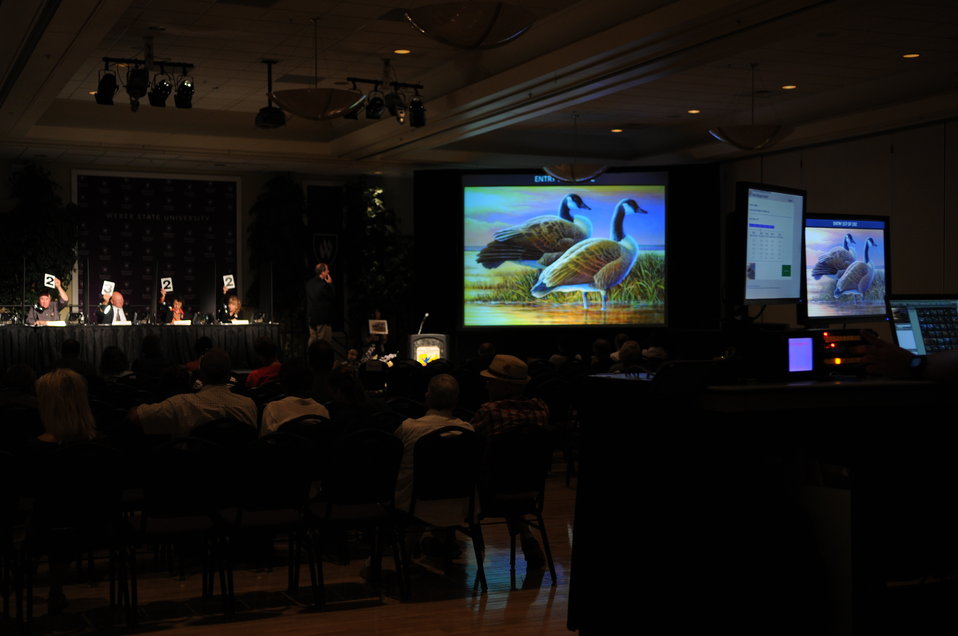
Judging

The U.S. Fish & Wildlife Service sponsored the 2012 Federal Duck Stamp Art Contest September 28 and 29 in Ogden, Utah, at Weber State University. A panel of five judges was responsible for choosing the art work used to design the 2013-2014 Migratory Bird Hunting and Conservation Stamp.